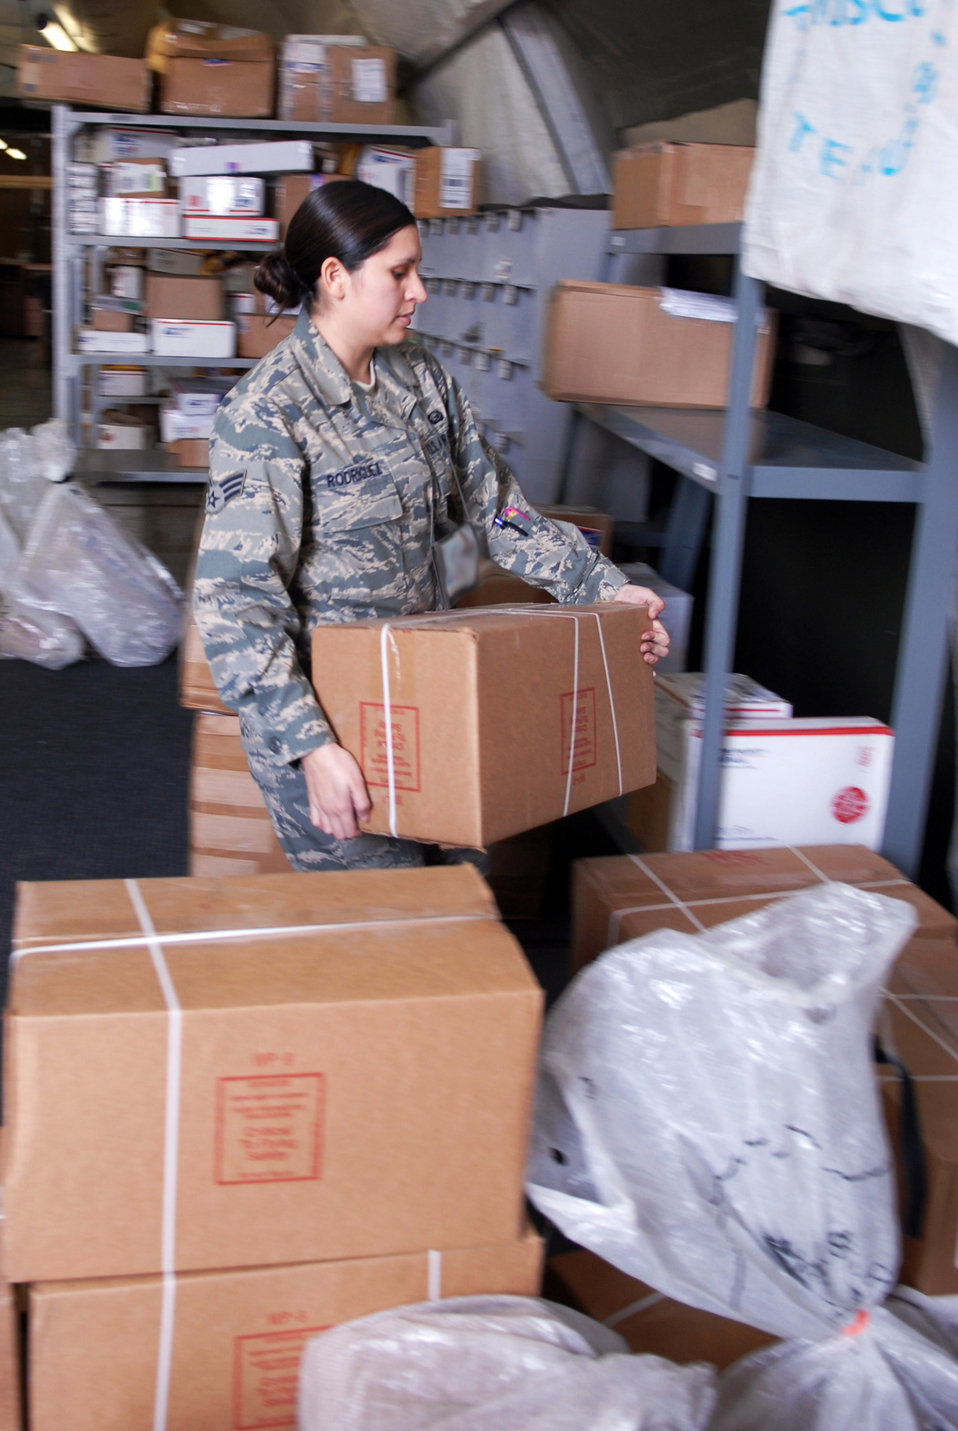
Teamwork helps Manas handle holiday season mail surge

Senior Airman Yolanda Rodriguez volunteers to sort mail Nov. 18 at Manas Air Base Kyrgyzstan. Between Thanksgiving and the first week of January, the Manas AB Post Office will receive roughly 4,400 pounds of mail every other day until the end of the holiday season. Airman Rodriguez is assigned to the 376th Expeditionary Force Support Squadron.